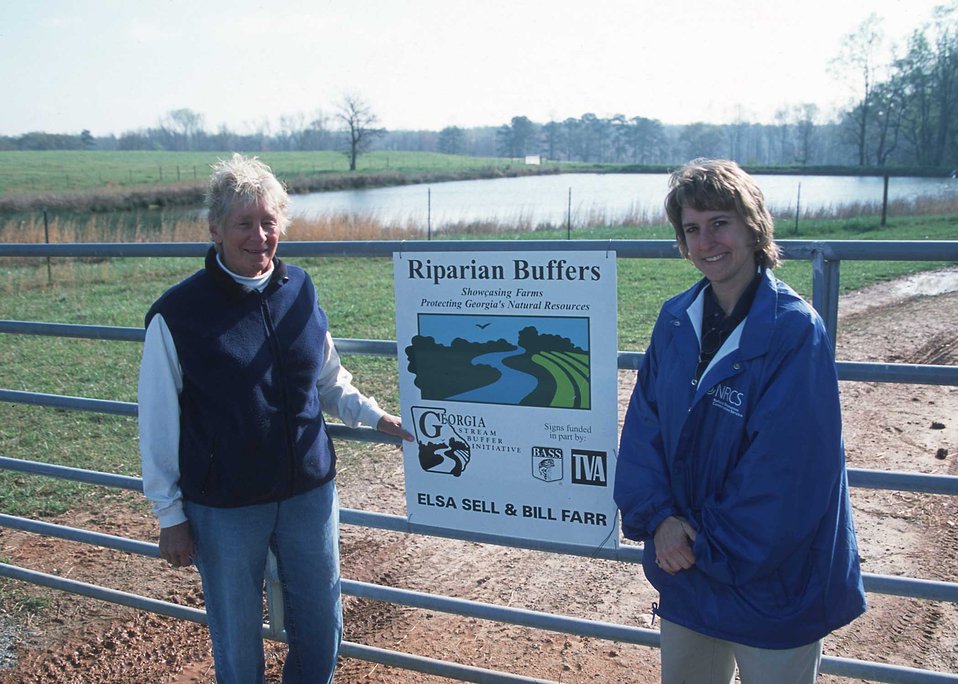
District Conservationist Carman Westerfield and cooperator stand in front of a recently installed Buffer Initiative sign. Lamar County, Georgia.